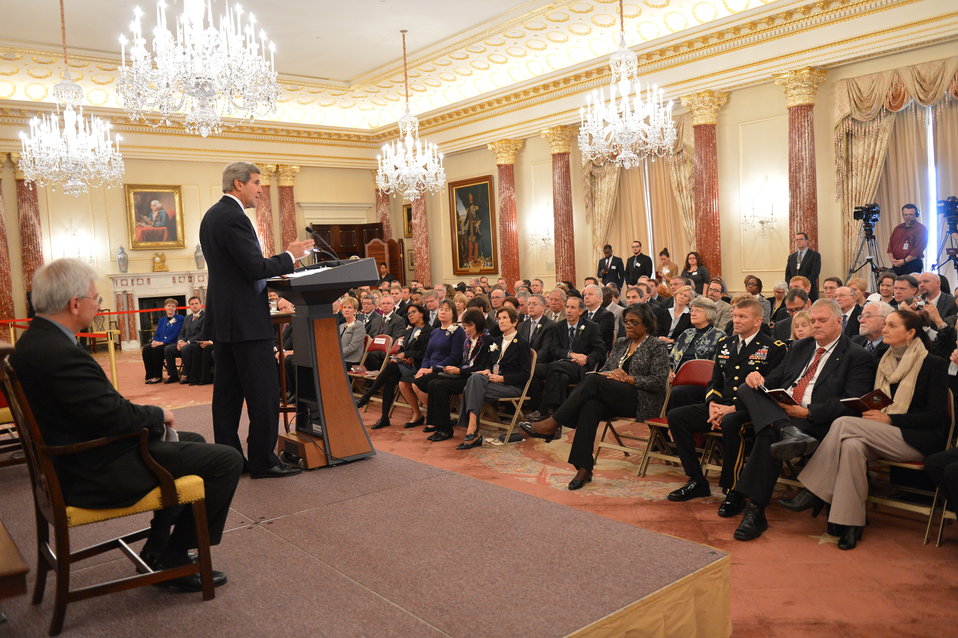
Secretary Kerry Delivers Remarks at the Annual Department Awards Ceremony

U.S. Secretary of State John Kerry delivers remarks at the annual Department of State Awards Ceremony at the U.S. Department of State in Washington, D.C., on November 14, 2013.